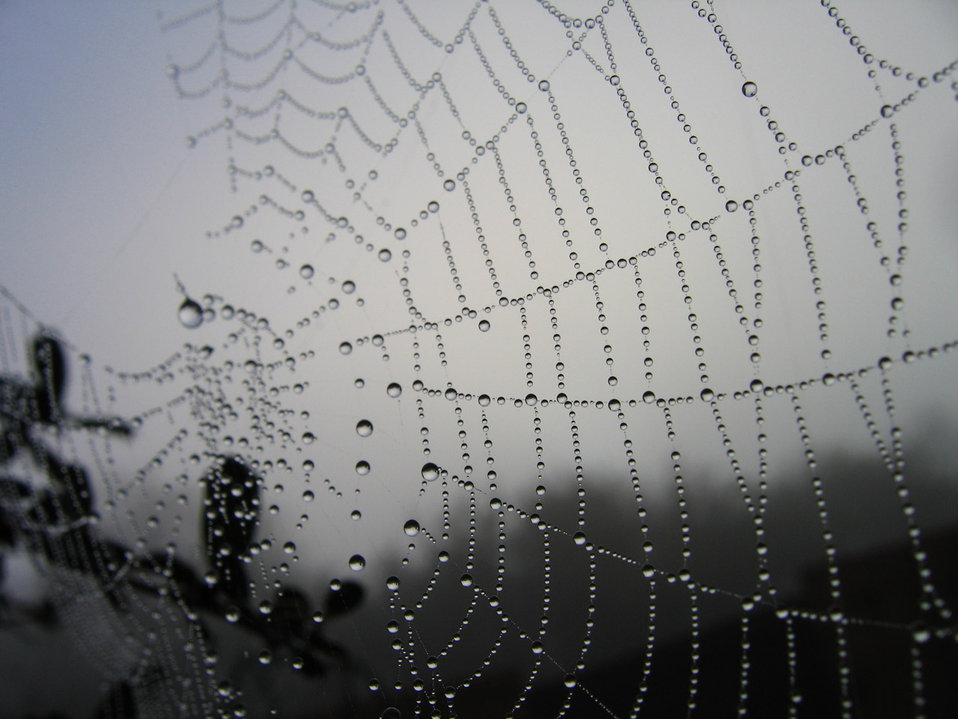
Morning web

Early morning spider web.